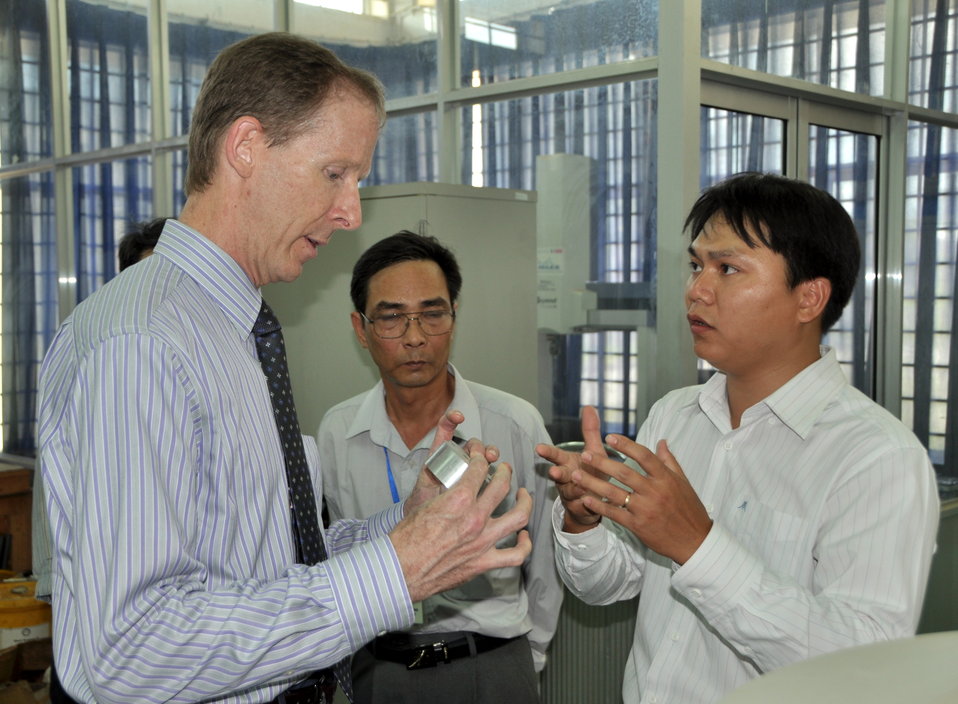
USAID Mission Director visits Danang University of Technology

Danang, July 17, 2013